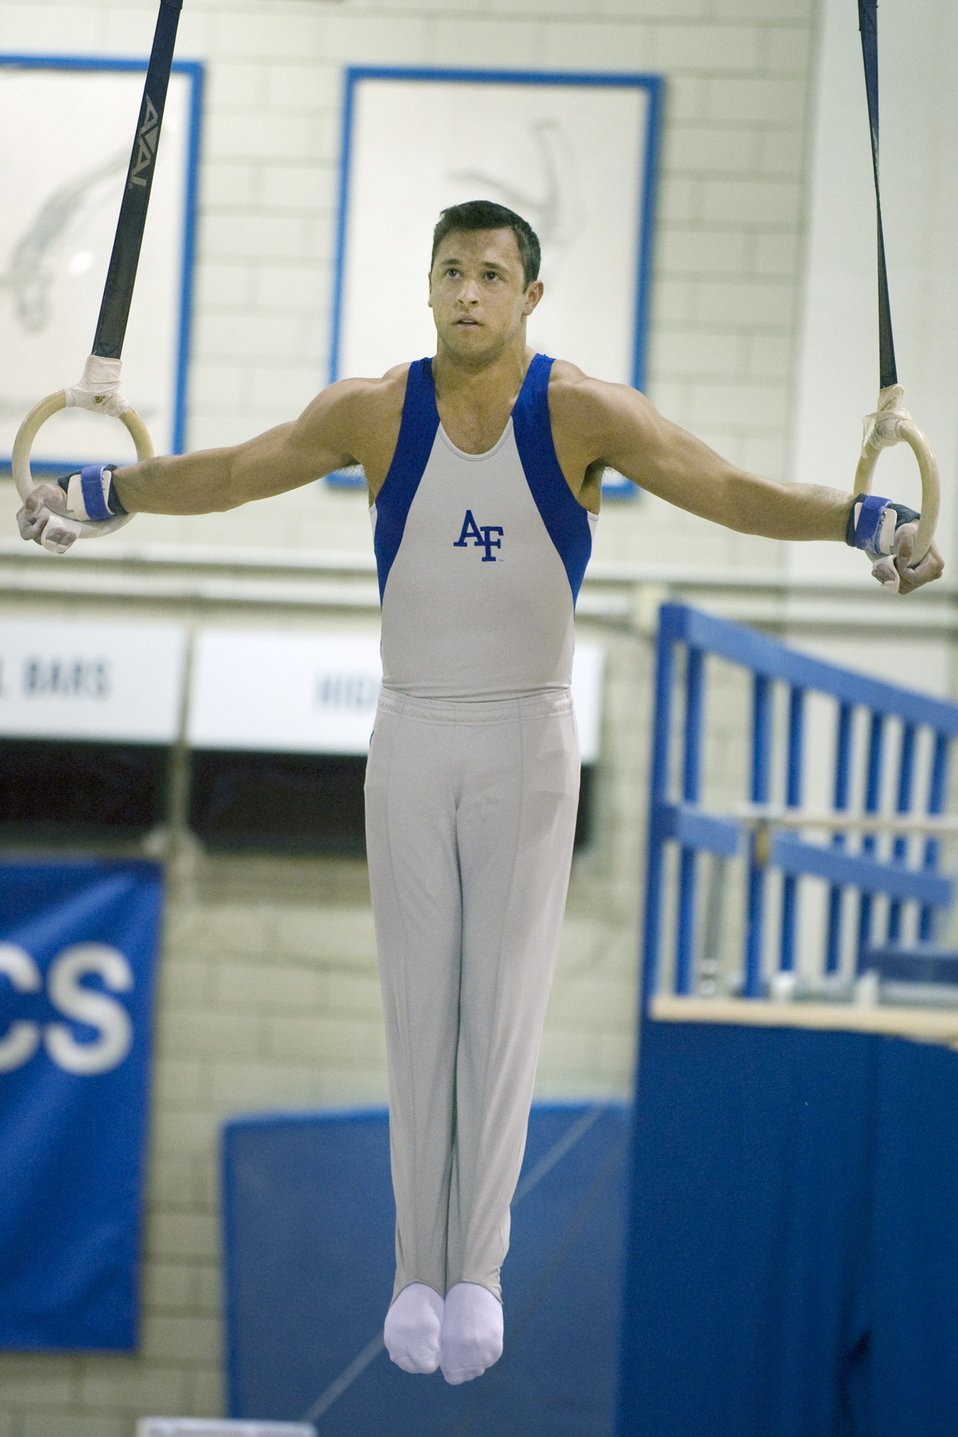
USA Gymnastics Championships

Air Force junior Dan Klimkowski competes on the still rings and claimed his first USAG All-American certificate with a score of 14.050 during the USA Gymnastics Championships held at the U.S. Air Force Academy's Cadet Gym in Colorado March 27, 2010.